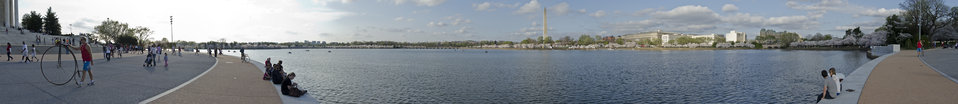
(For best viewing, download 'original' size) Virtual panorama, using 15 photos taken within one minute, from Jefferson Memorial, Washington, D.C., on Tuesday, March 20, 2012. This is the peak day for the 2012 Cherry Blossom season. Higher resolution photo available.